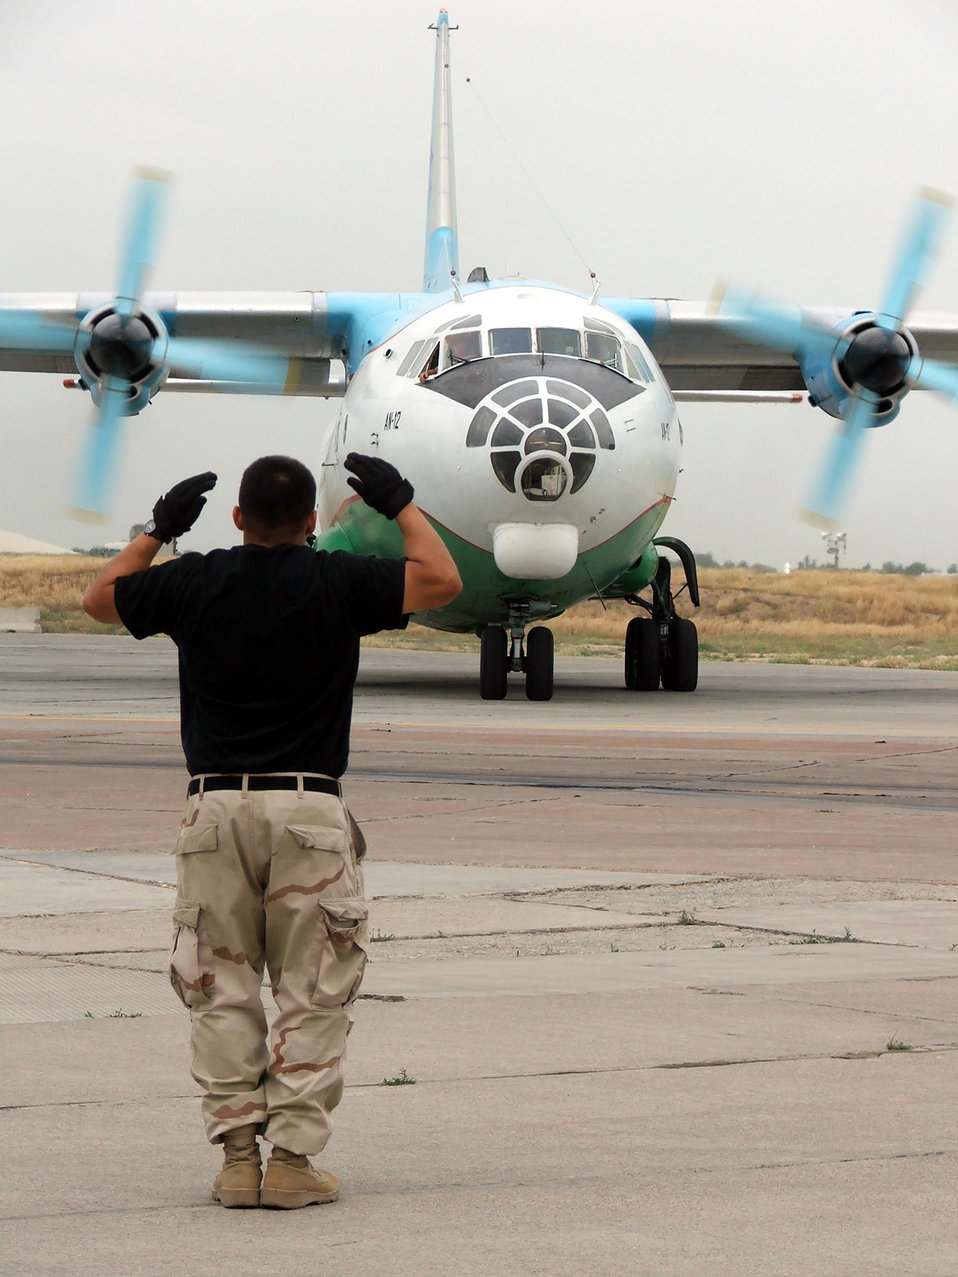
Transient alert Airmen handle diverse role

KARSHI-KHANABAD AIR BASE, Uzbekistan -- Staff Sgt. Sammy Ayala gives directions to the crew of a Russian-built AN-12 cargo plane here May 2. He is a transient alert Airman and KC-10 Extender crew chief with the 416th Air Expeditionary Group's transient alert flight. He is deployed from Travis Air Force Base, Calif.